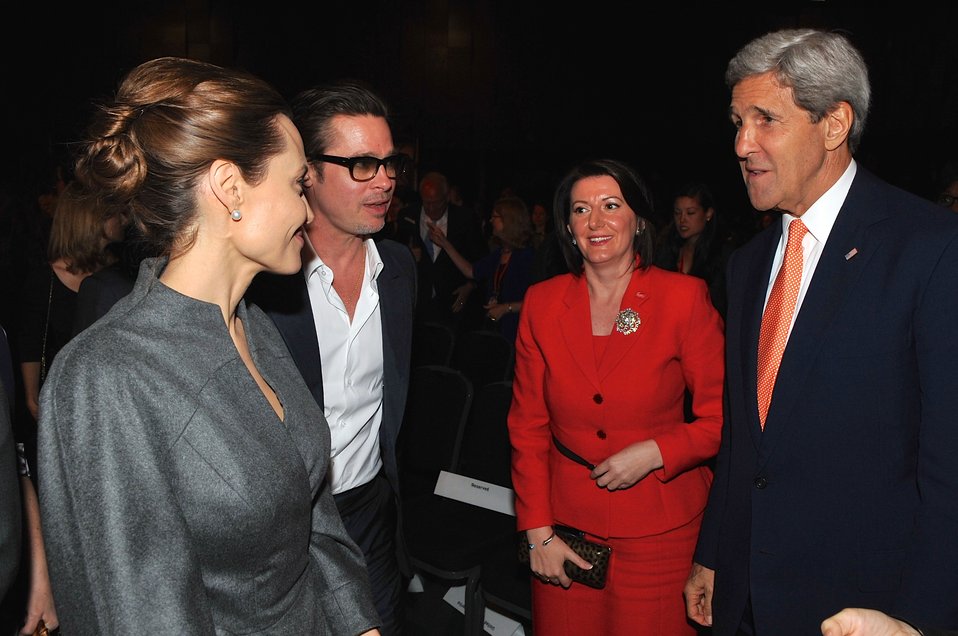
Secretary Kerry Chats With Actress Jolie, Actor Pitt and Wife of British Foreign Secretary at Conclusion of Summit to End Sexual Violence in Conflict

U.S Secretary of State John Kerry chats with actress and UN Envoy Angelina Jolie, her finace actor Brad Pitt, and Ffion Jenkins, the wife of British Foreign Secretary William Hague, at the conclusion of the 2014 Global Summit to End Sexual Violence in Conflict in London on June 13, 2014.